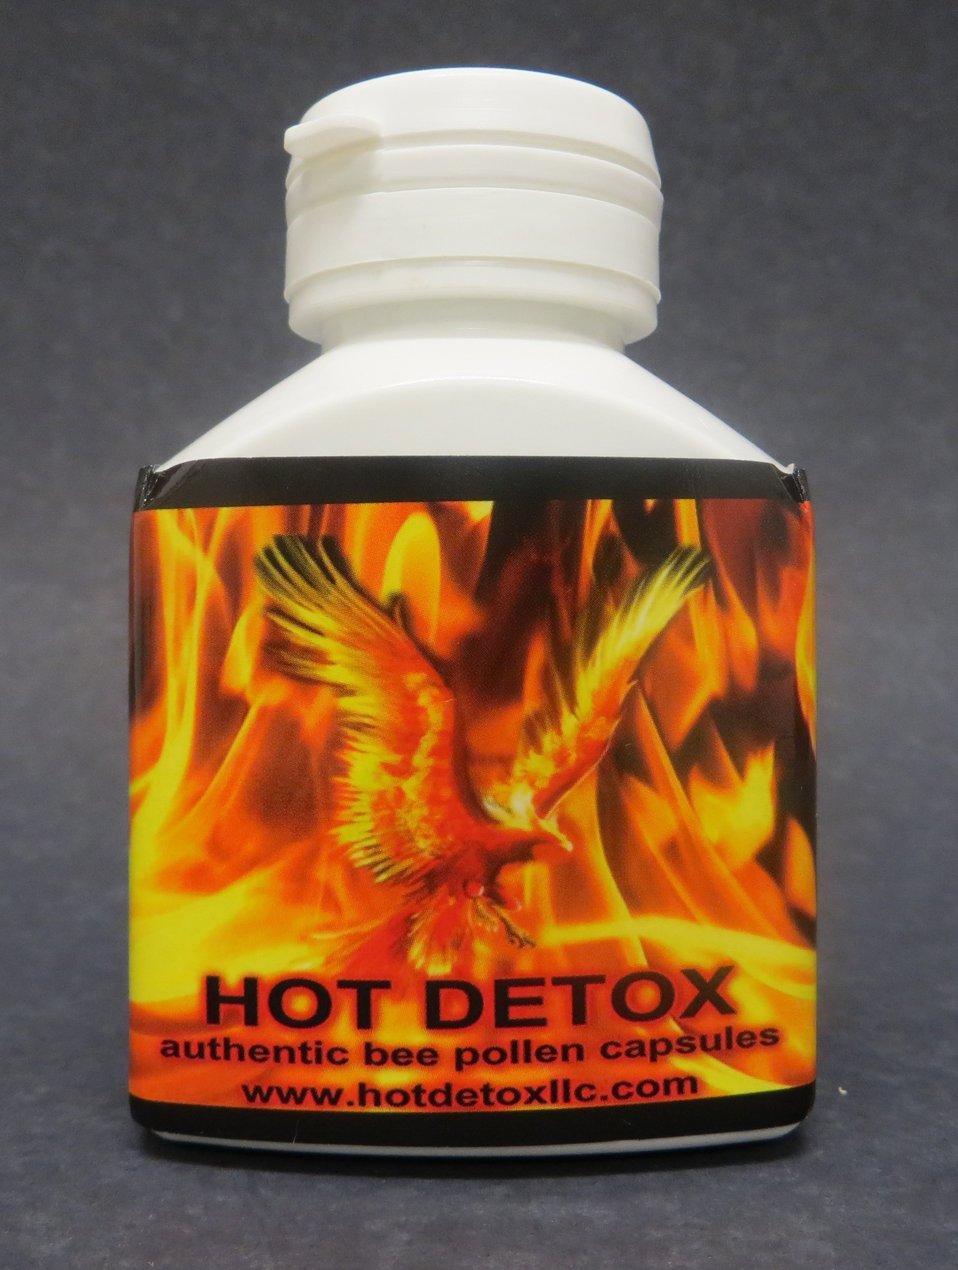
Hot Detox

January 28, 2014 - The FDA is advising consumers not to purchase or use Hot Detox, a product promoted and sold as a dietary supplement for weight loss. The product was found to contain undeclared sibutramine.